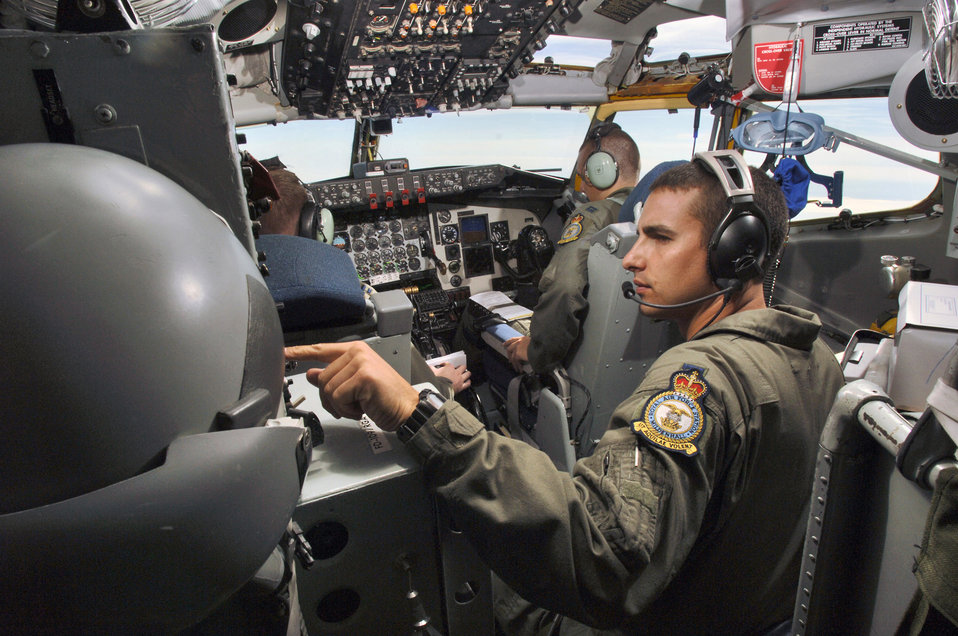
Long days, flexibility part of tanker crew's life

Capt. Joseph Petrosky (right) adjusts his intercom settings aboard a KC-135 Stratotanker on July 25. Captain Petrosky, an instructor pilot, mentored Capts. Rob Kline (left) and Sam Ensminger on the duties and responsibilities of being aircraft commanders.